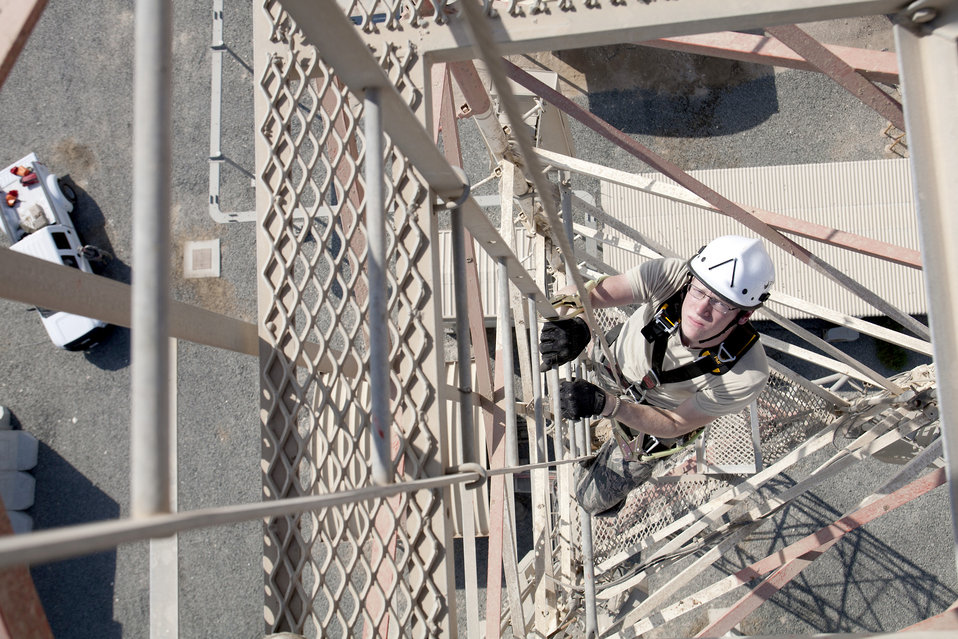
Only look up

Airman 1st Class Jacob Wright climbs a tower to clean a security camera Oct. 18, 2010 at an air base in Southwest Asia. The cameras serve as a vital countermeasure against ground threats by performing surveillance and identification functions. He is assigned to the 380th Expeditionary Security Forces Squadron.